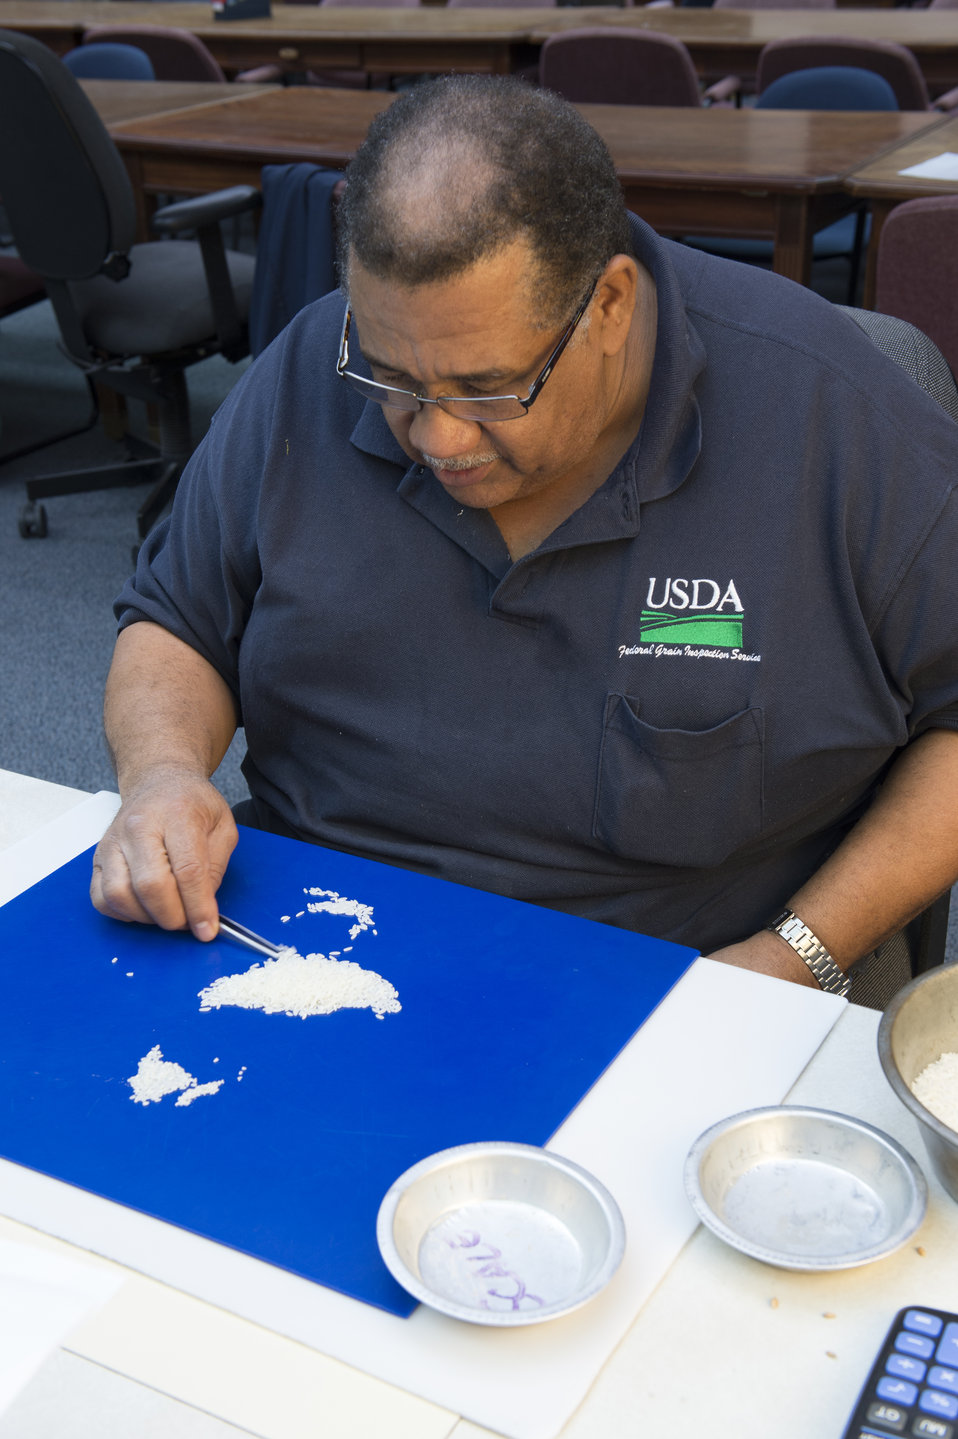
U.S. Department of Agriculture (USDA) Grain Inspection, Packers and Stockyards Administration (GIPSA) Federal Grain Inspection Service (FGIS) employee examines rice samples at the FGIS inspection laboratory in New Orleans, LA on Monday, Nov. 18, 2013.